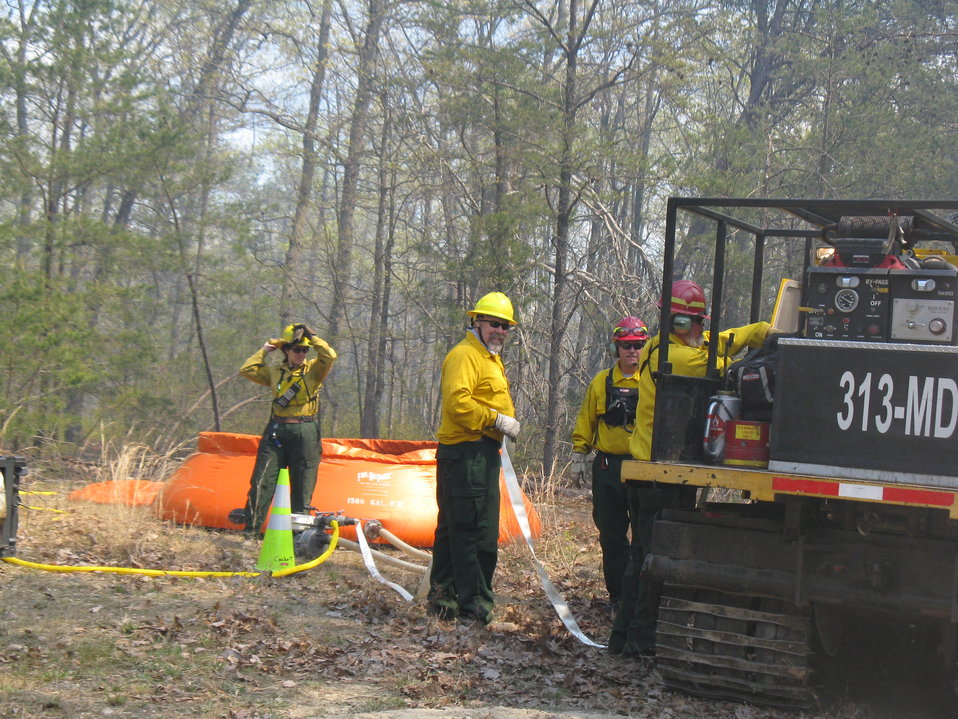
Controlled Burn Preparations

Laurel, Maryland, April 5, 2012: Firefighers fill a portable water tank known as a pumpkin while standing next to a Bombadier, a tracked vehicle with a water tank. The burn was done at Patuxent Research Refuge's Savannah Restoration Unit to increase refuge species and habitat diversity. Specifically, the refuge hoped to increase density and diversity of rare darkling beetles and forest floor plants.